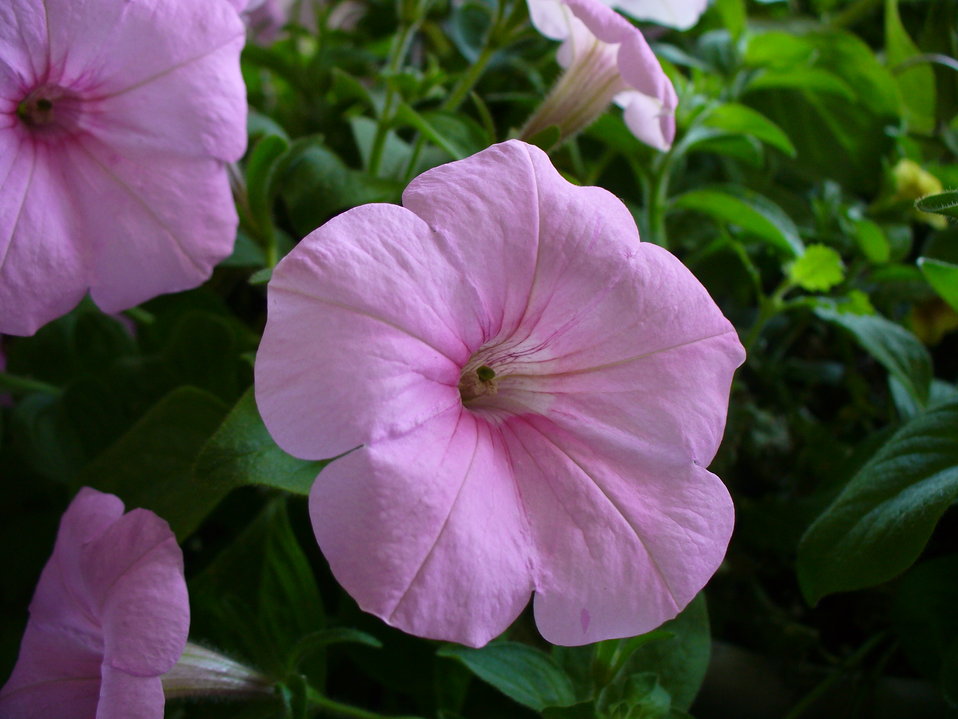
I am the originator of this photo. I hold the copyright. I release it to the public domain. This photo depicts a flower.